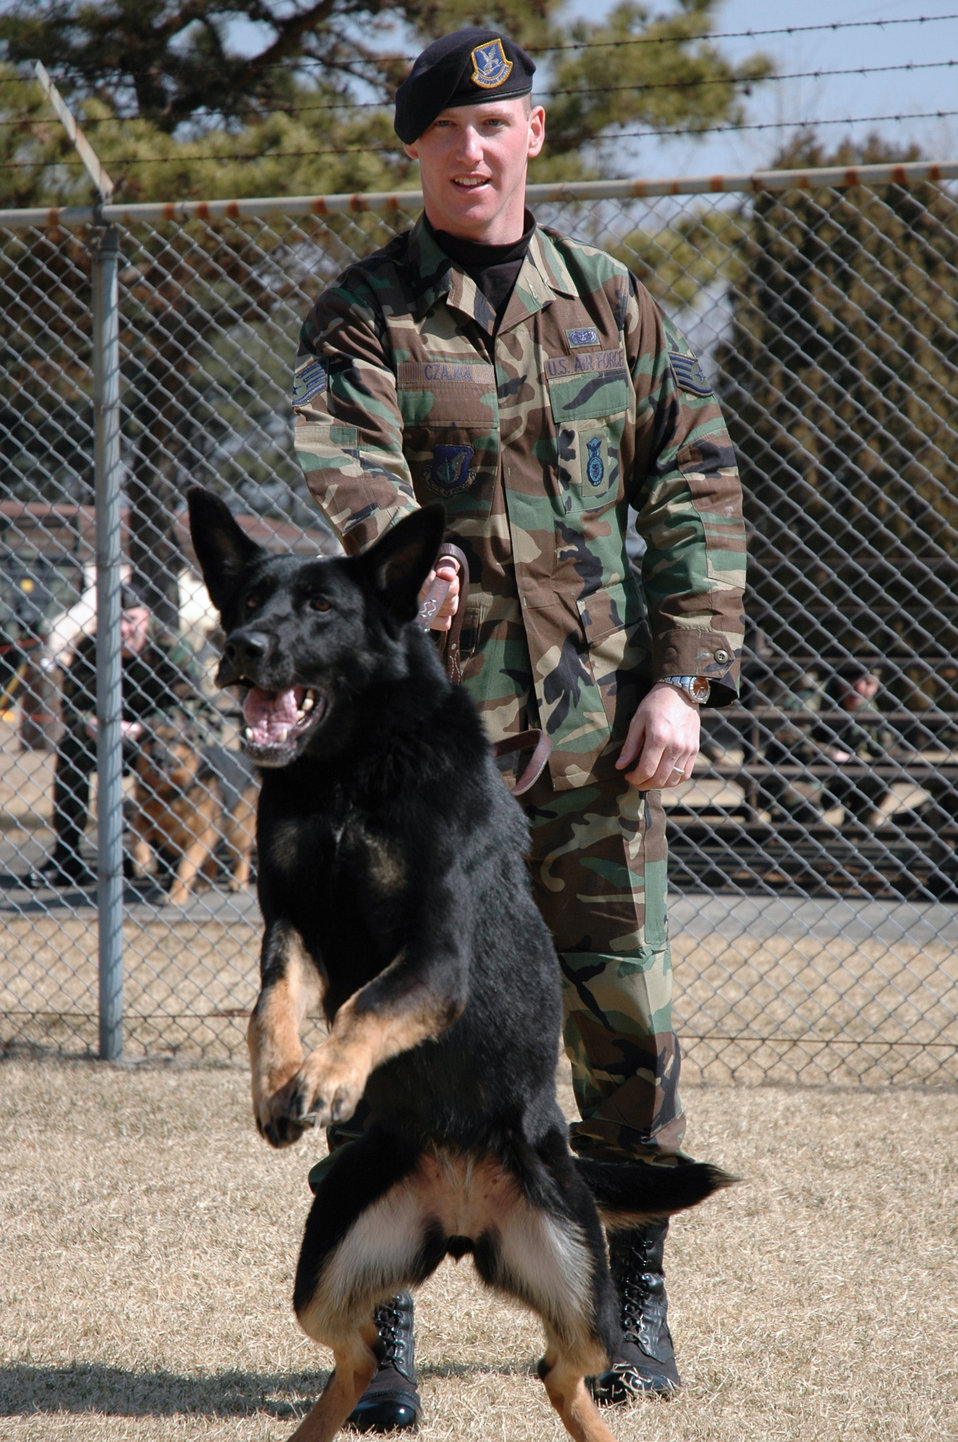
Military dogs dig into security

OSAN AIR BASE, South Korea -- Staff Sgt. Corby Czajka holds back his eager partner, Betty, before engaging in a criminal chase exercise here. Sergeant Czajka is a 51st Security Forces Squadron military working dog handler. The dogs are highly trained to obey specific commands and for multiple tasks. The military working dog kennel here is the largest operational kennel in the Air Force.